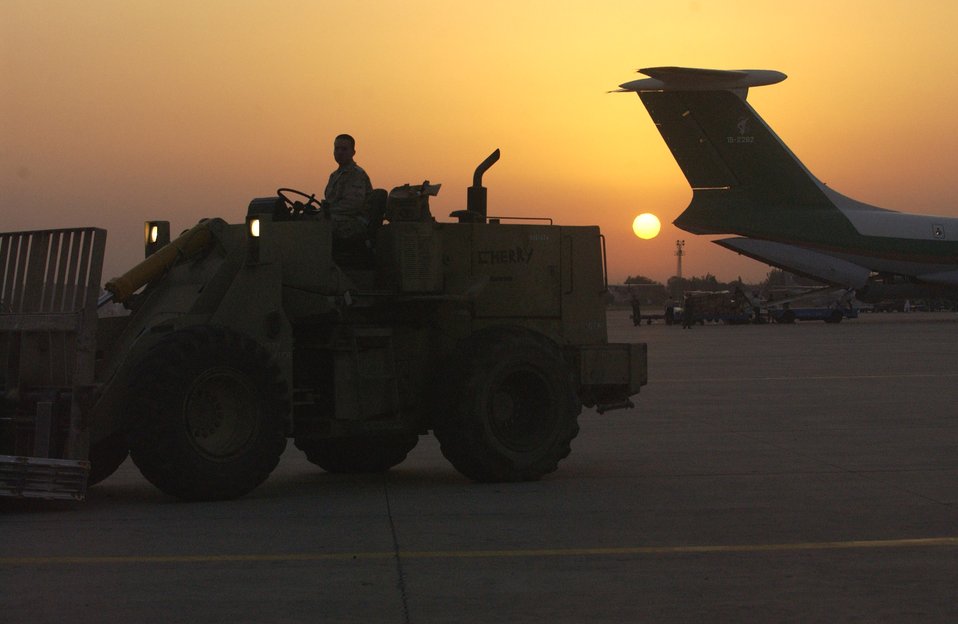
Earthquake relief

CHAKLALA AIR BASE, Pakistan - An Airman from the 818th Contingency Response at Group, McGuire Air Force Base, NJ., move pallets supporting earthquake relief efforts Oct. 14.